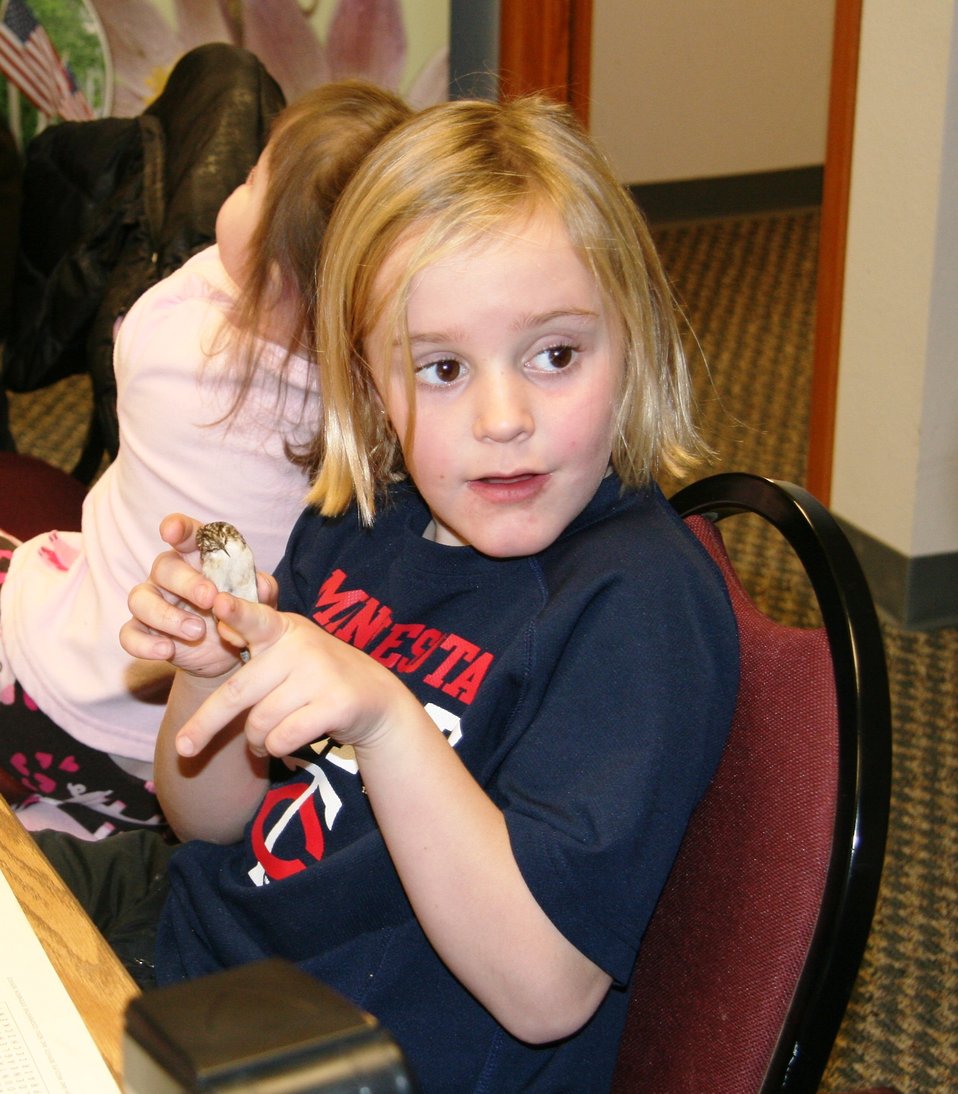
How Does the Brown Creeper Eat Food?

Discussing the beak of the brown creeper and how it is adpated to eat its food.